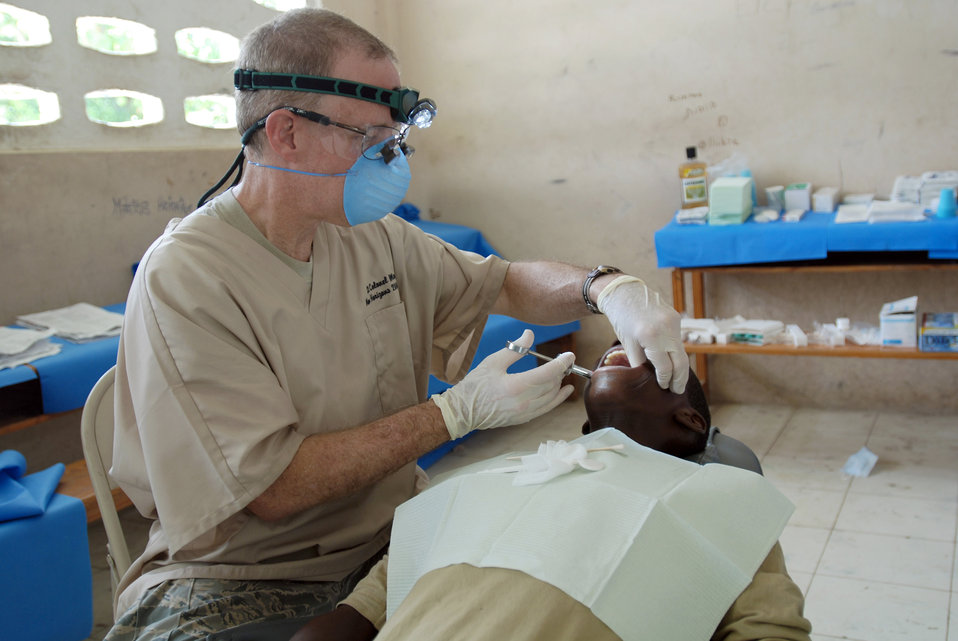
56th Medical Group Airmen provide medical support

Lt. Col. Richard Moore prepares a patient for a tooth extraction at the U.S. Army South New Horizons-Haiti 2010 Ennery medical assistance site July 13, 2010, in Mandrin, Haiti. New Horizons officials, in partnership with officials from the government of Haiti, are conducting various medical, dental and engineering missions for people in Gonaives, Haiti. Colonel Moore is a dentist with the 56th Medical Group.